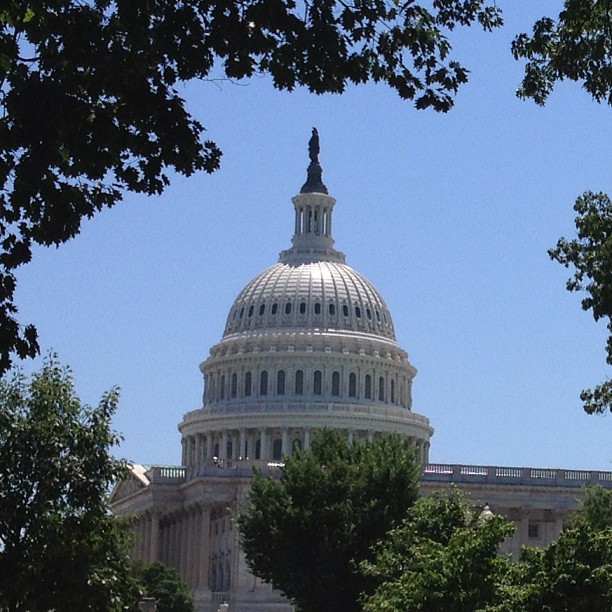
A spectacular Friday afternoon outside in #DC.